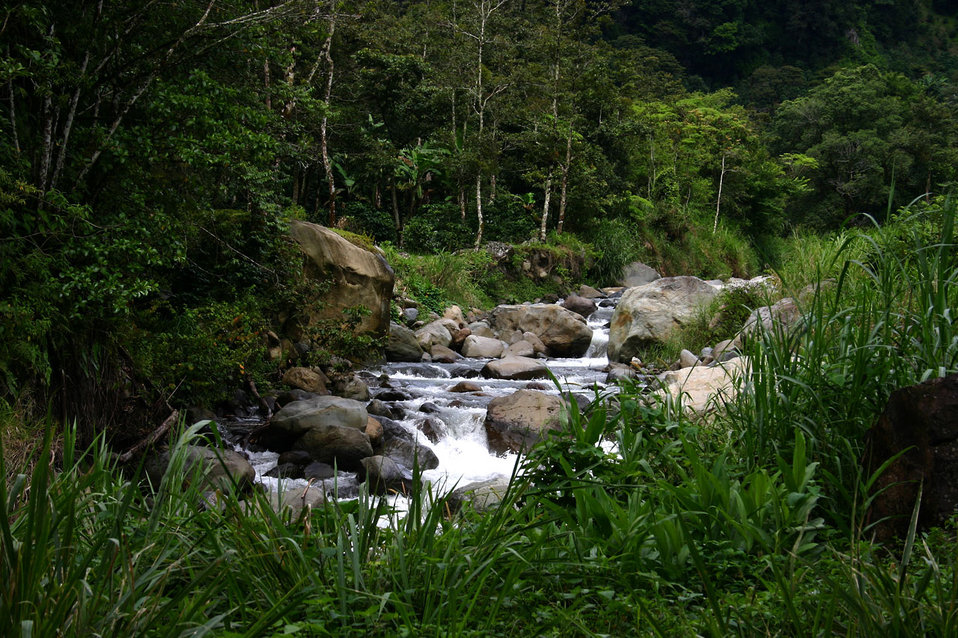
Panama stream

Mountain stream in boquete, panama.